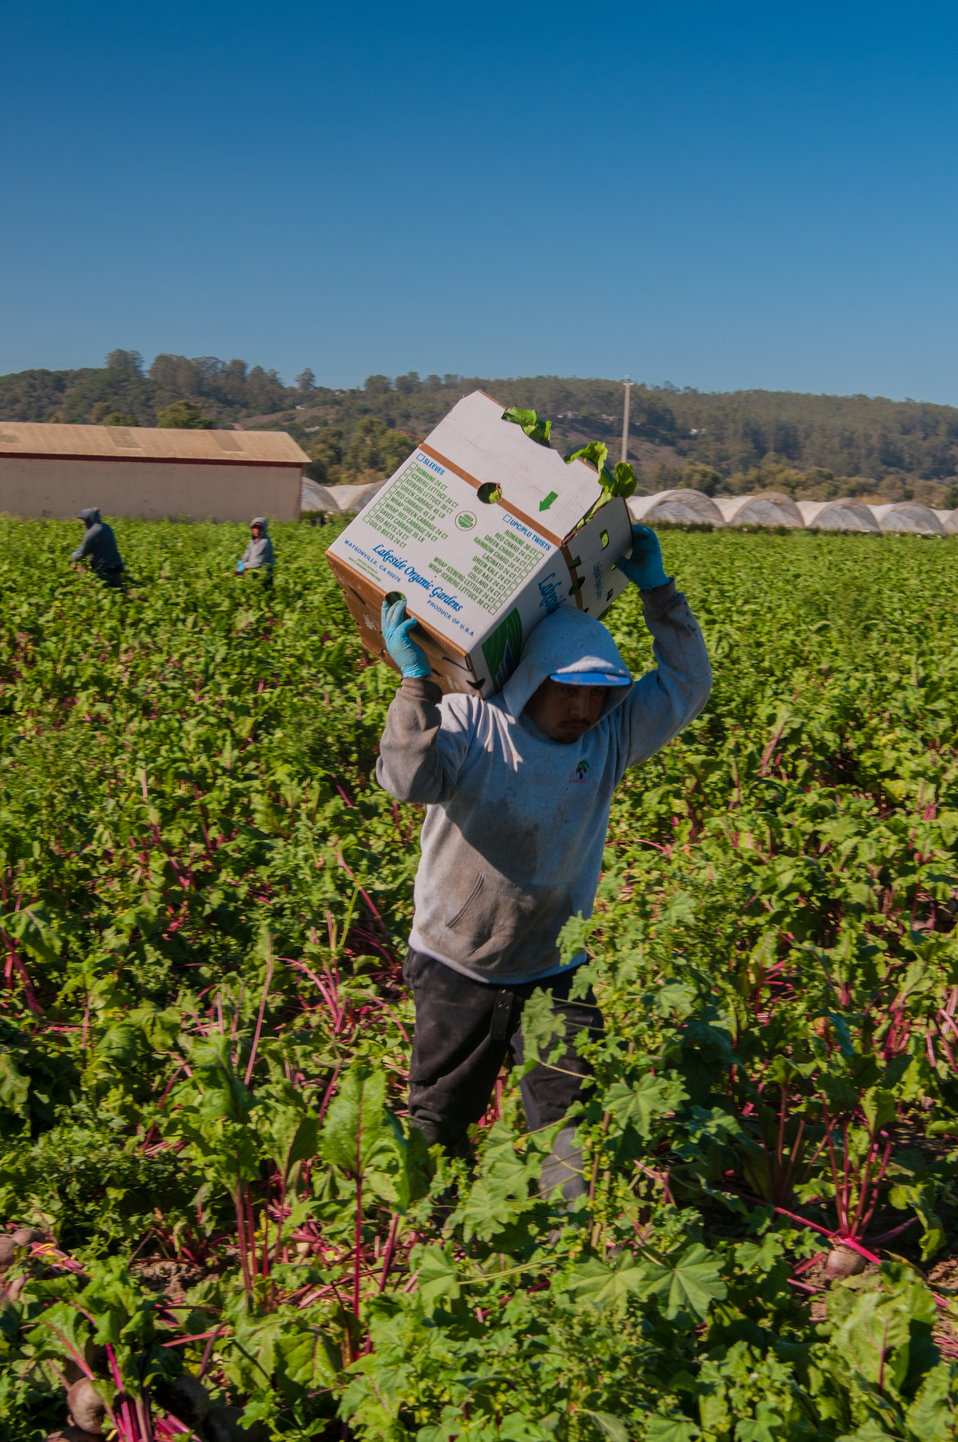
Migrant workers harvest Beets at Lakeside Organic Gardens in Watsonville, CA on Tuesday, Aug. 27, 2013.